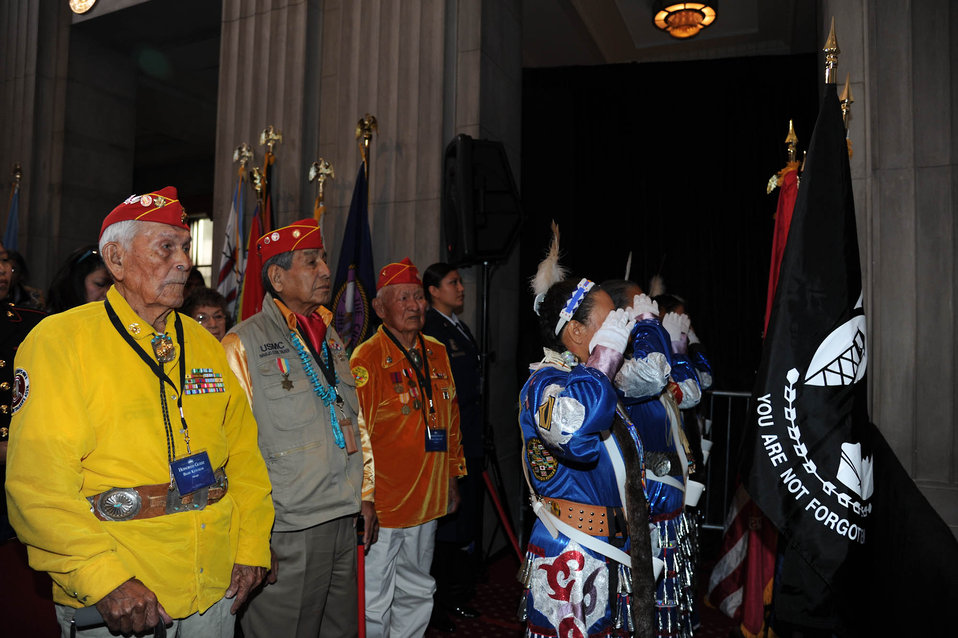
November 13, 2013 - Administrator McCarthy attends White House Tribal Conference

Administrator McCarthy joined President Obama and other administration officials at the White House Tribal Conference on November 13, 2013. The Conference was attended by leaders of 566 federally recognized tribes and members of the White House Council on Native American Affairs.